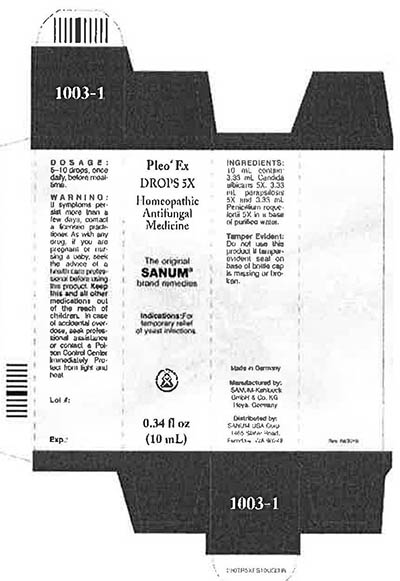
RECALLED – Homeopathic Drug Products

March 18, 2014 – Product Recall – Terra-Medica Issues Voluntary Nationwide Recall of Specified Lots of Pleo Homeopathic Drug Products Due to the Potential for Undeclared Penicillin.